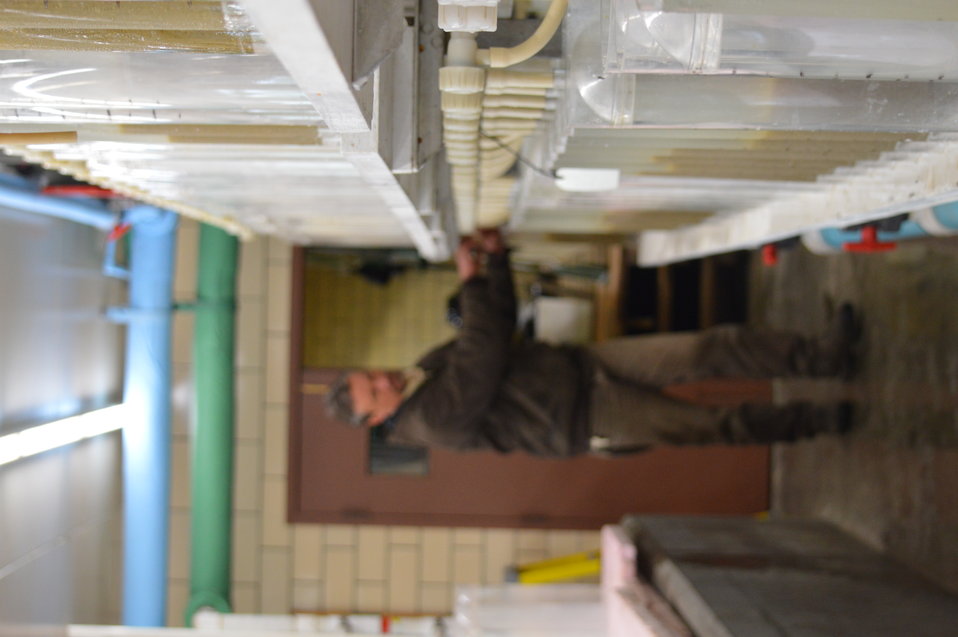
Service employee tends to upwelling jars

Garrison Dam National Fish Hatchery in North Dakota.